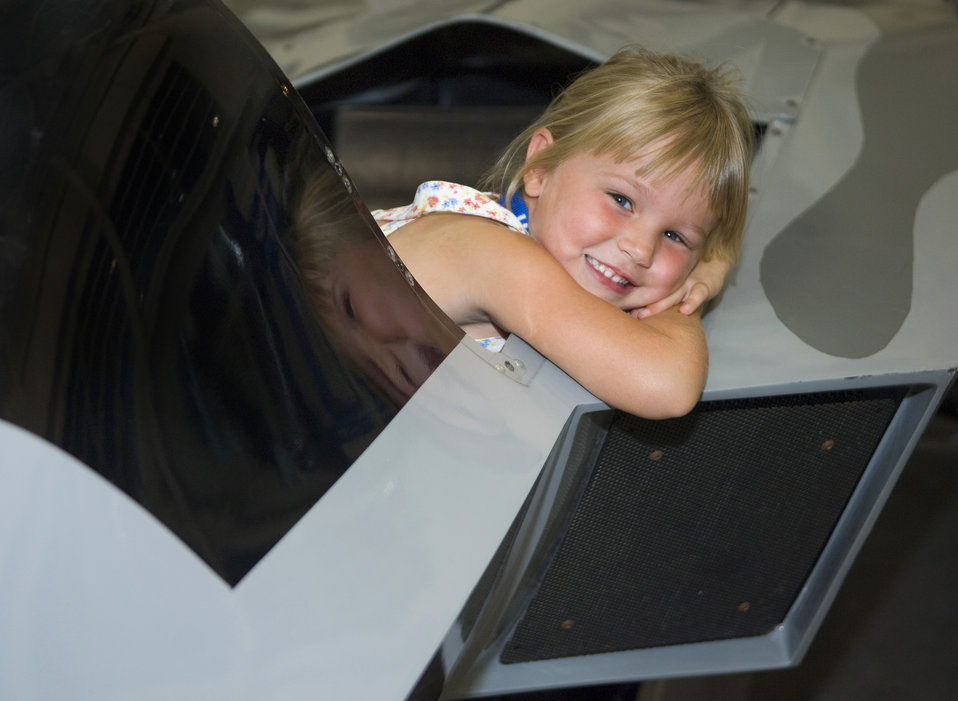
Air Force Week mixes past, present, future at museum

Elizabeth Boese prepares to sit inside a F-22 mini jet at the Strategic Air and Space Museum during Air Force Week in the Heartland Aug. 13 in Ashland, Neb. Museum officials hosted a day dedicated to the legacy of airpower providing special Air Force demonstration teams and displays.